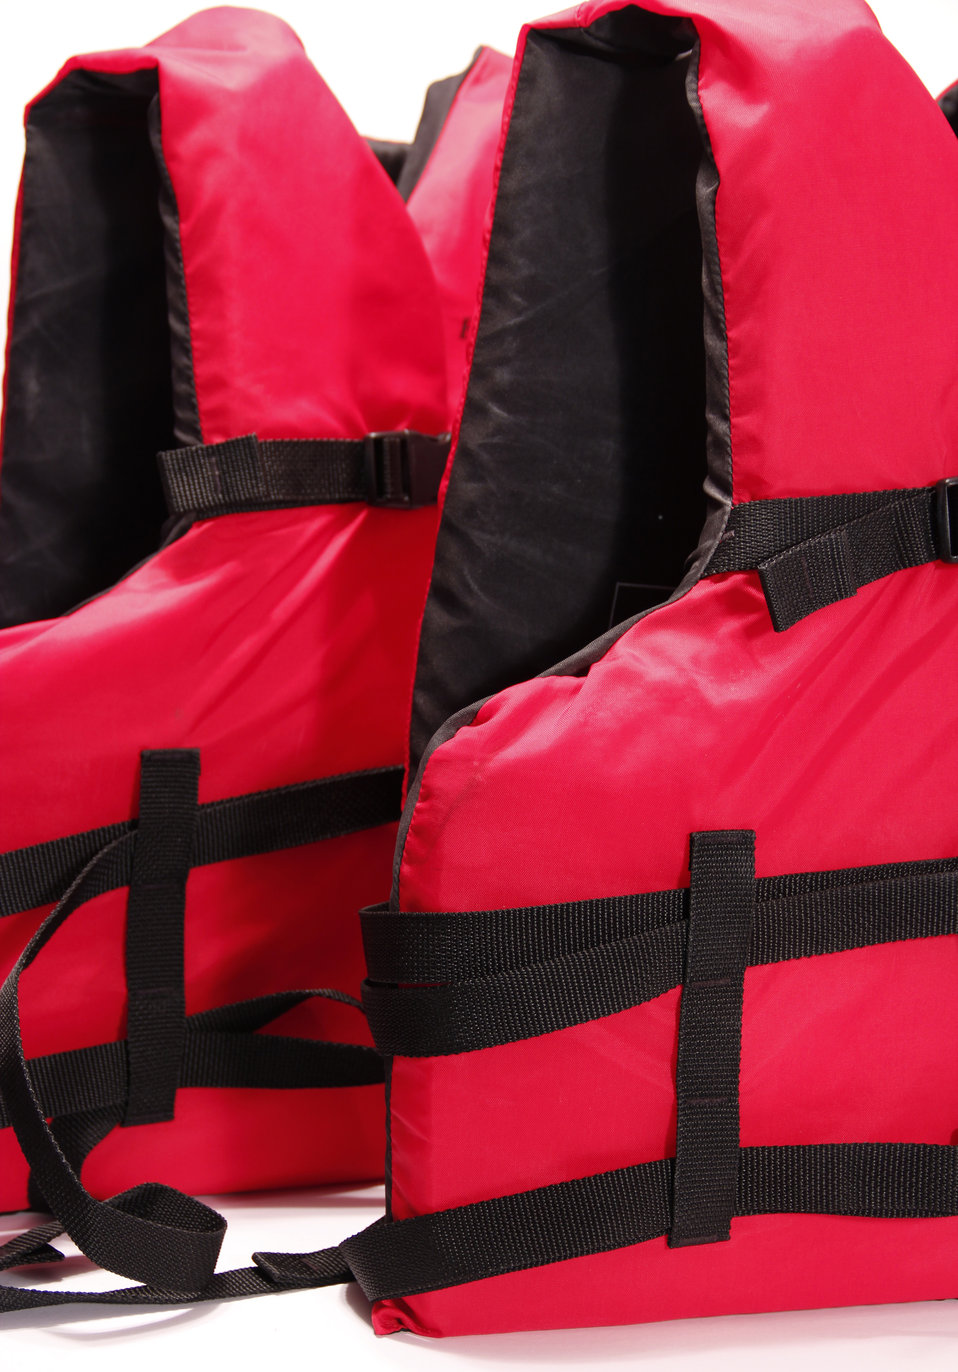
This photograph depicts two life vests, also known as life jackets, that displayed a bright red exterior, and were lined with a black interior.